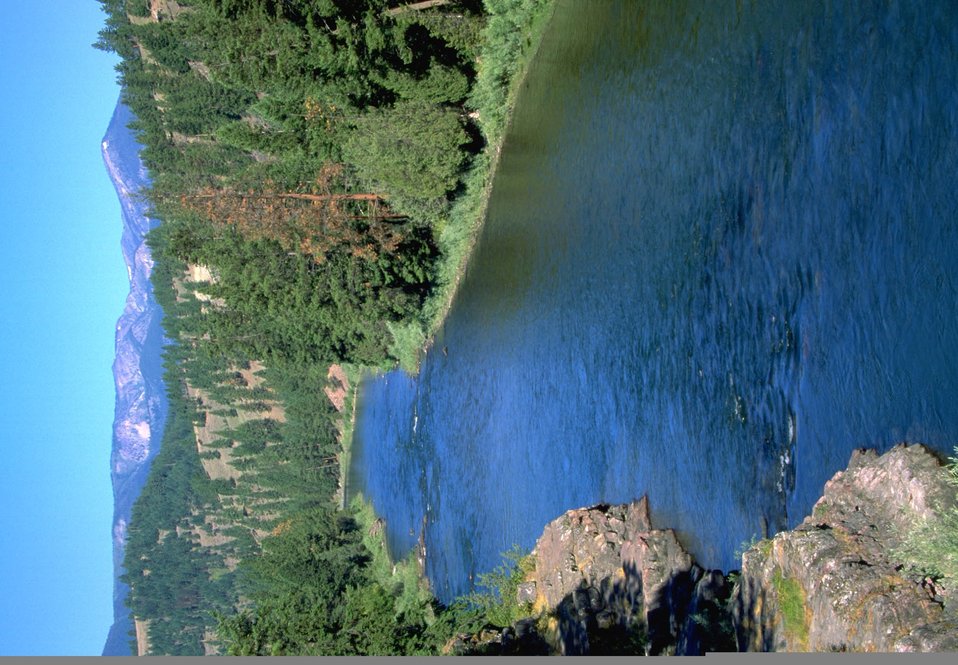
Blackfoot River